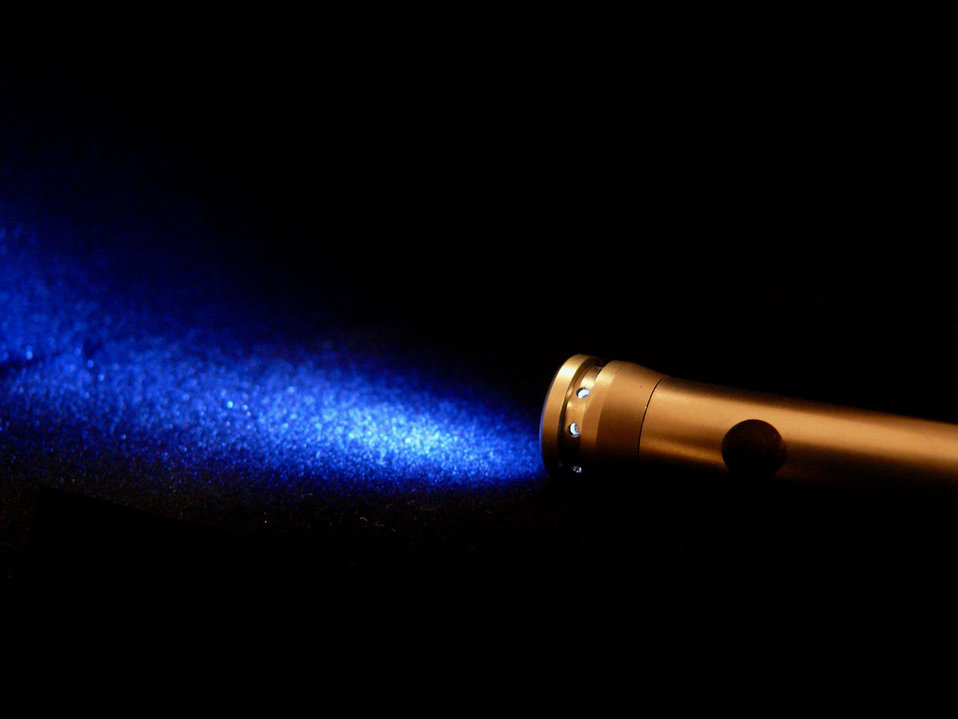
Torch on black backround.